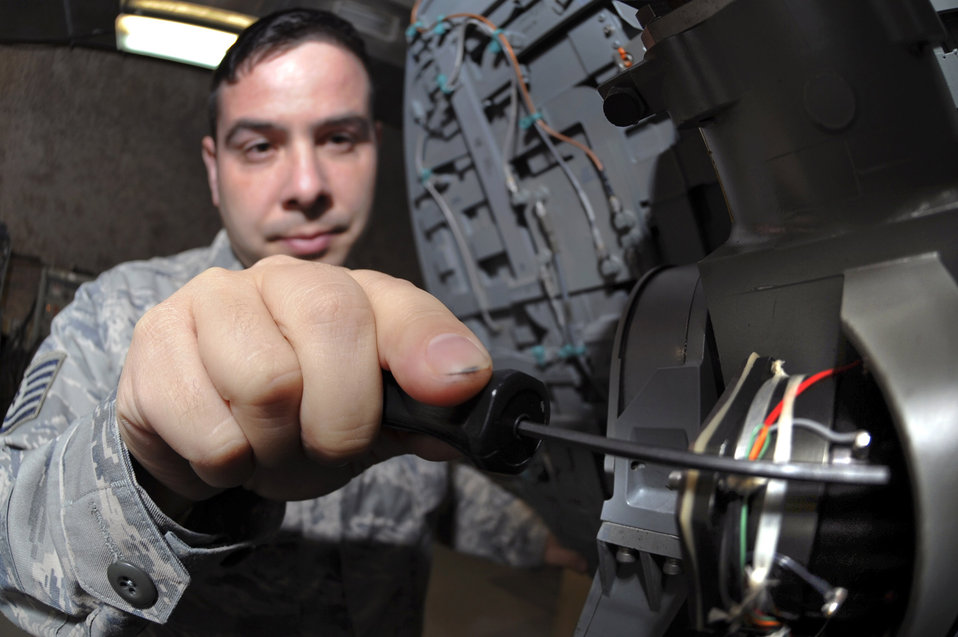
Keeping the Fighters Fighting.

Tech. Sgt. Henry Diogo performs a quality assurance inspection on an F-15E Strike Eagle radar antenna Feb. 19 in an undisclosed location in Southwest Asia. The antenna directs the radar energy which allows the pilot of the aircraft to locate and lock onto targets. Sergeant Diogo is the F-15E Avionics Production Supervisor with the 379th Expeditionary Maintenance Squadron.